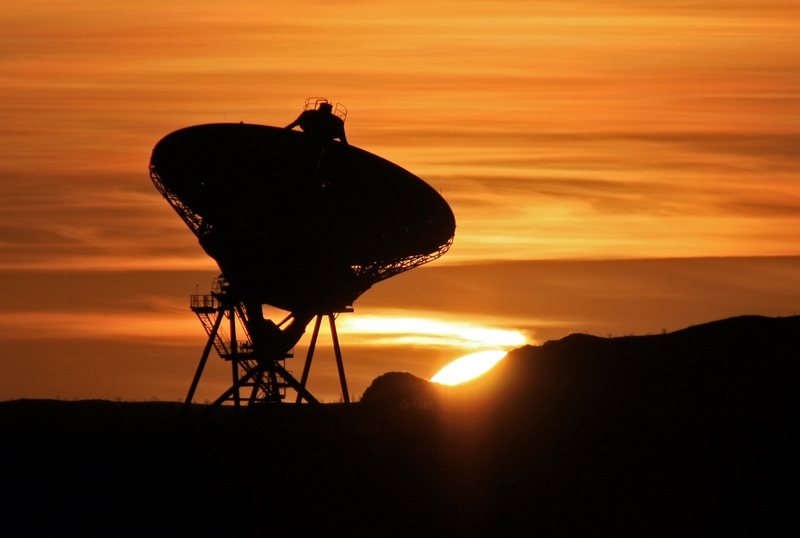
NEW MEXICO SUNSET BEHIND AN 82-FOOT DIAMETER RADIO TELESCOPE AT LOS ALAMOS NATIONAL LABORATORY, TECHNICAL AREA 33, ONE IN THE VERY LONG BASELINE ARRAY SPANNING 5, 351 MILES.